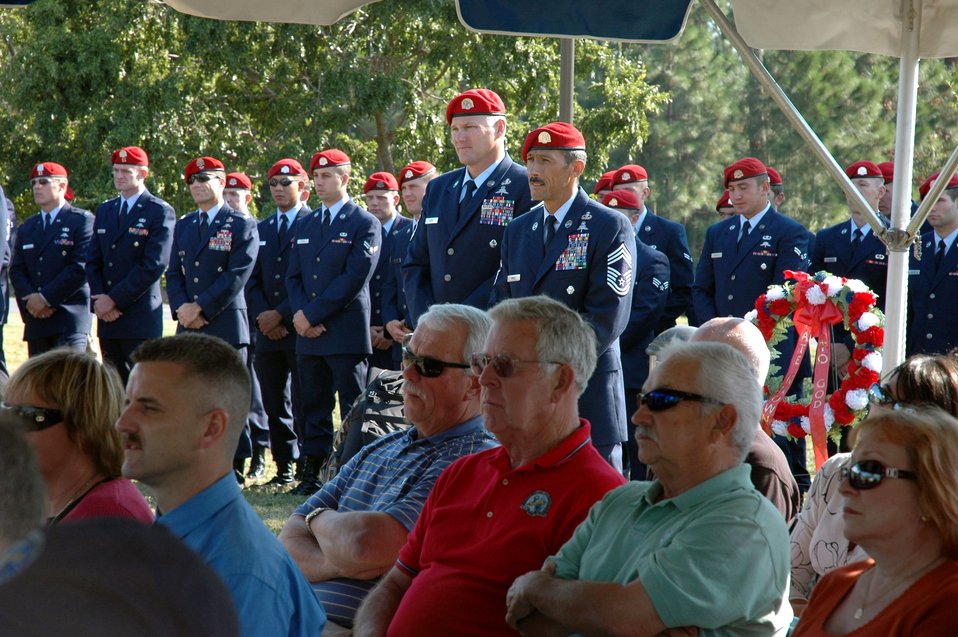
Combat controllers honor fallen comrades

More than 100 people gathered to honor fallen combat controllers and special tactics officers during the Annual Combat Control Association reunion Nov. 3 at Hurlburt Field, Fla. Family members of fallen controllers laid a wreath in dedication to all fallen heroes.